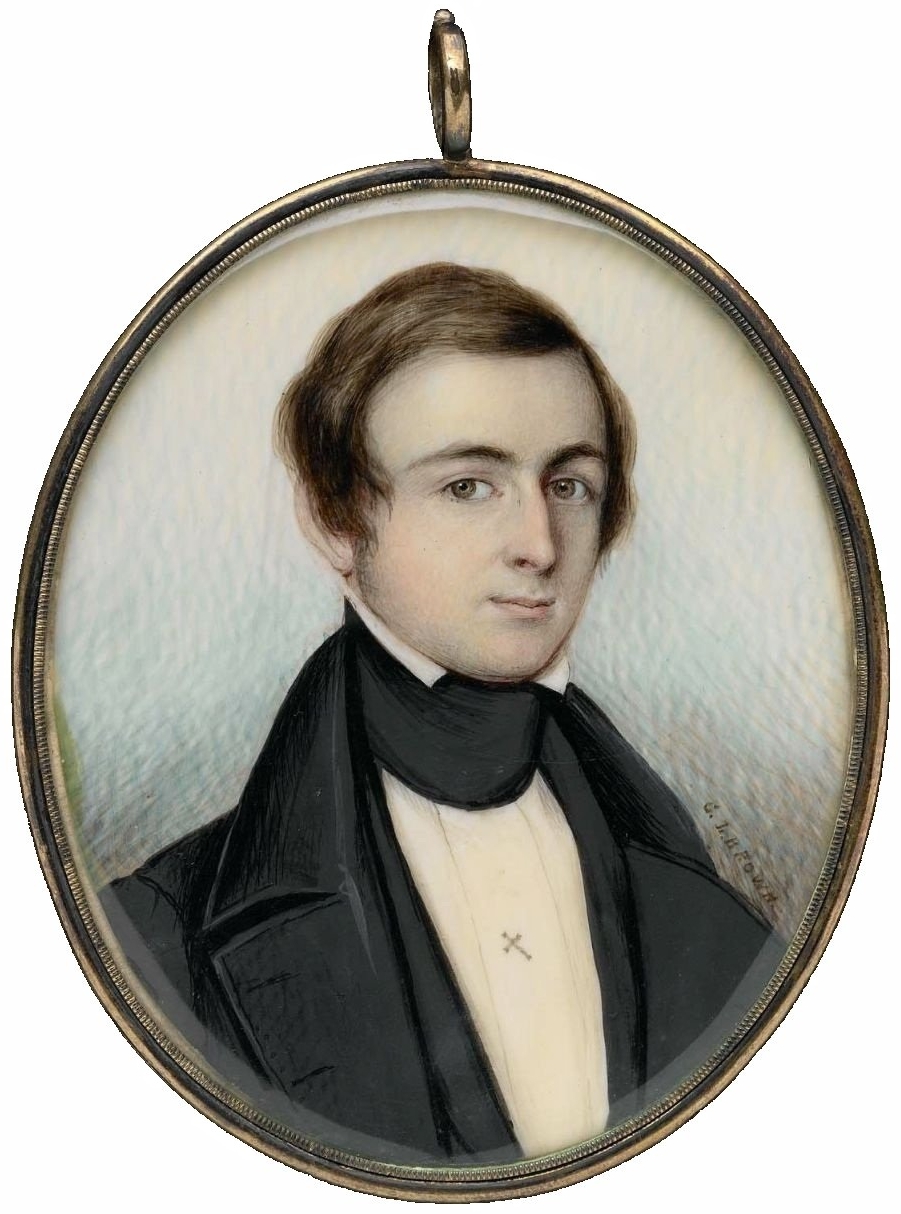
1839 JosuahRichardsonBigelow byGeorgeLBrown MFABoston